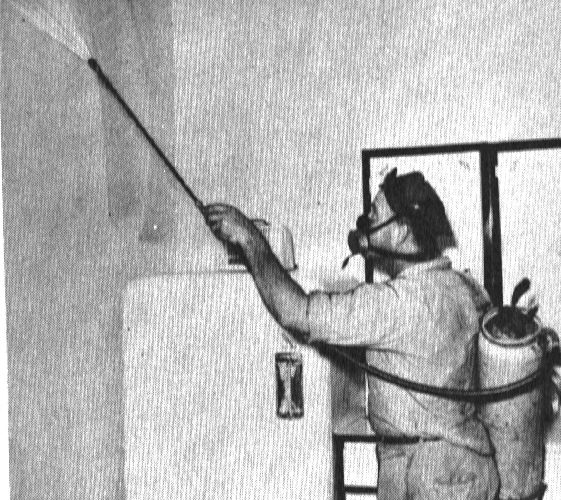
Historical glimpse of Malaria eradication in the USA in 1940's and 1950's